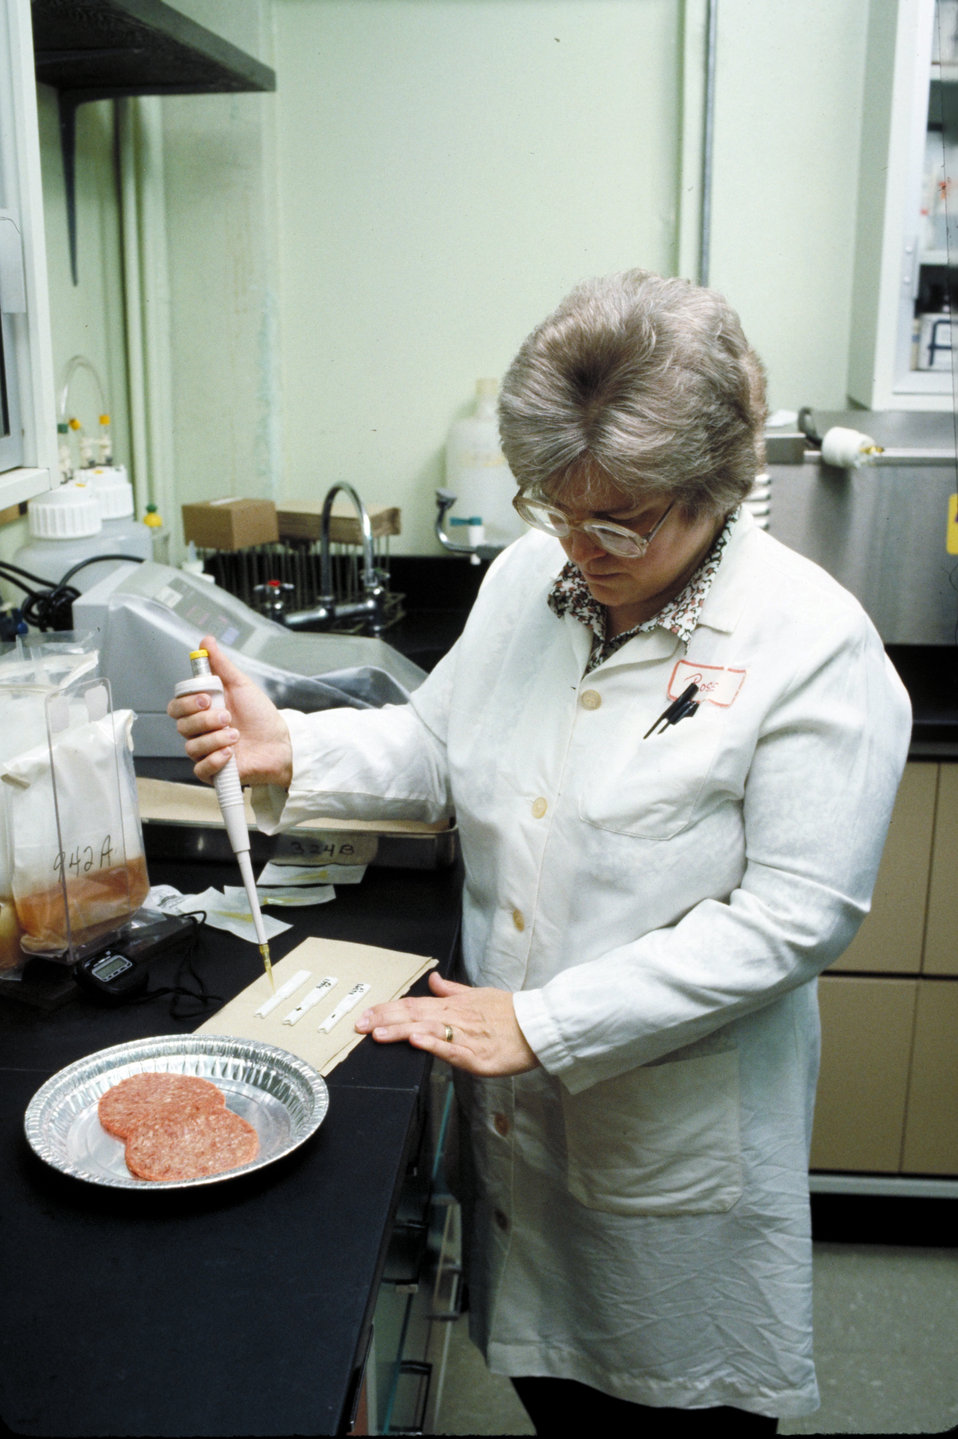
U.S. Department of Agriculture’s (USDA) Food Safety Inspection Service (FSIS) scientist conducts microbiological tests for the presence of specific pathogenic microorganisms in or on the product on March 13, 1993.